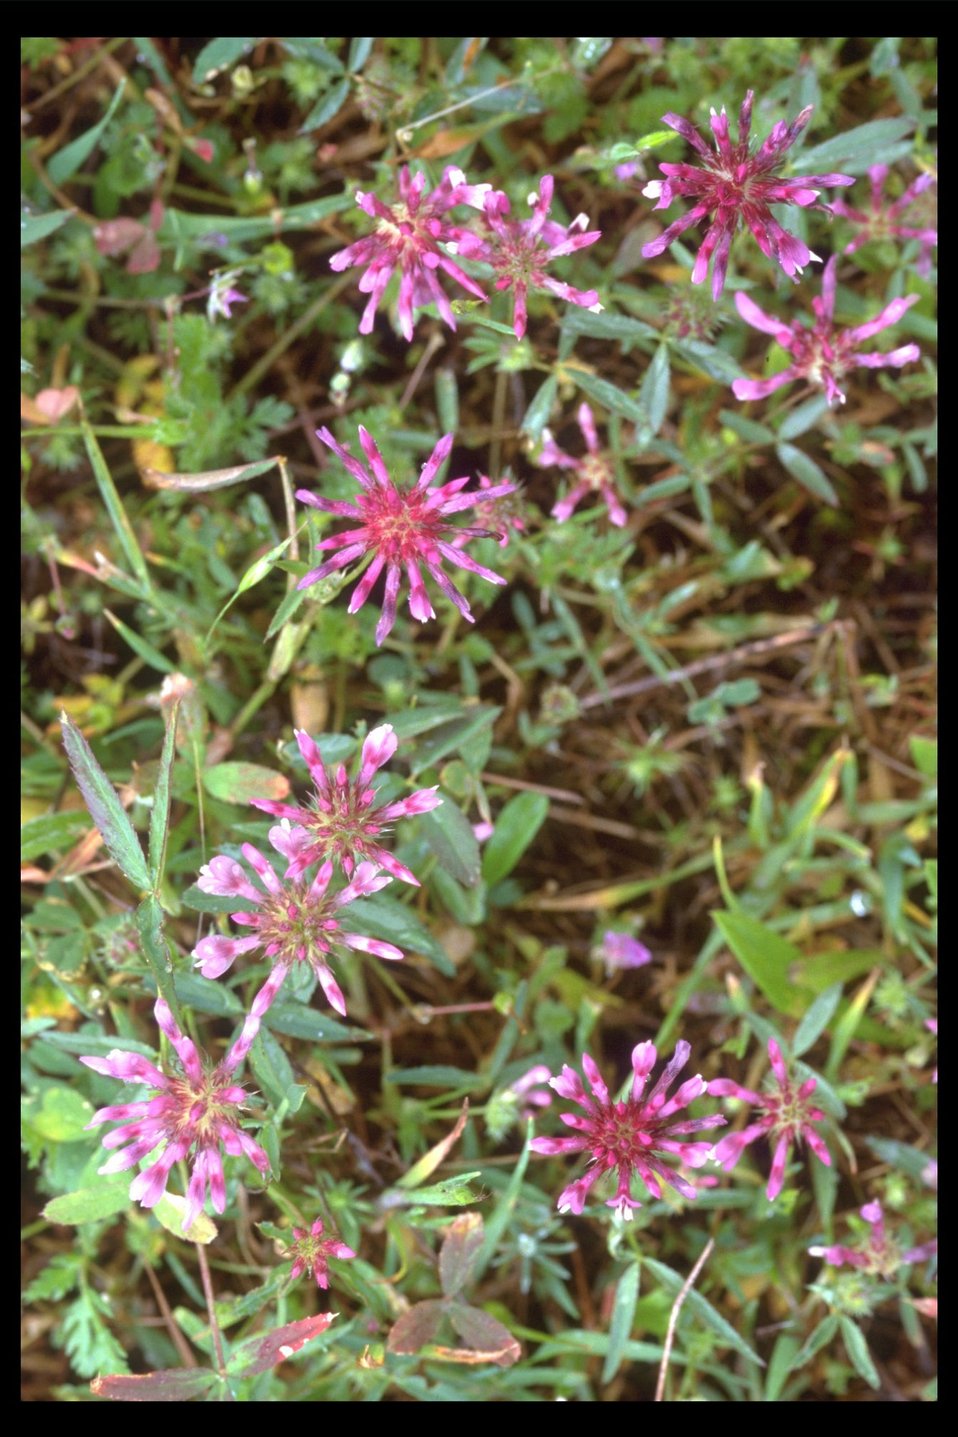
Tomcat Clover (Trifolium willdenovii) at Shady Cove.